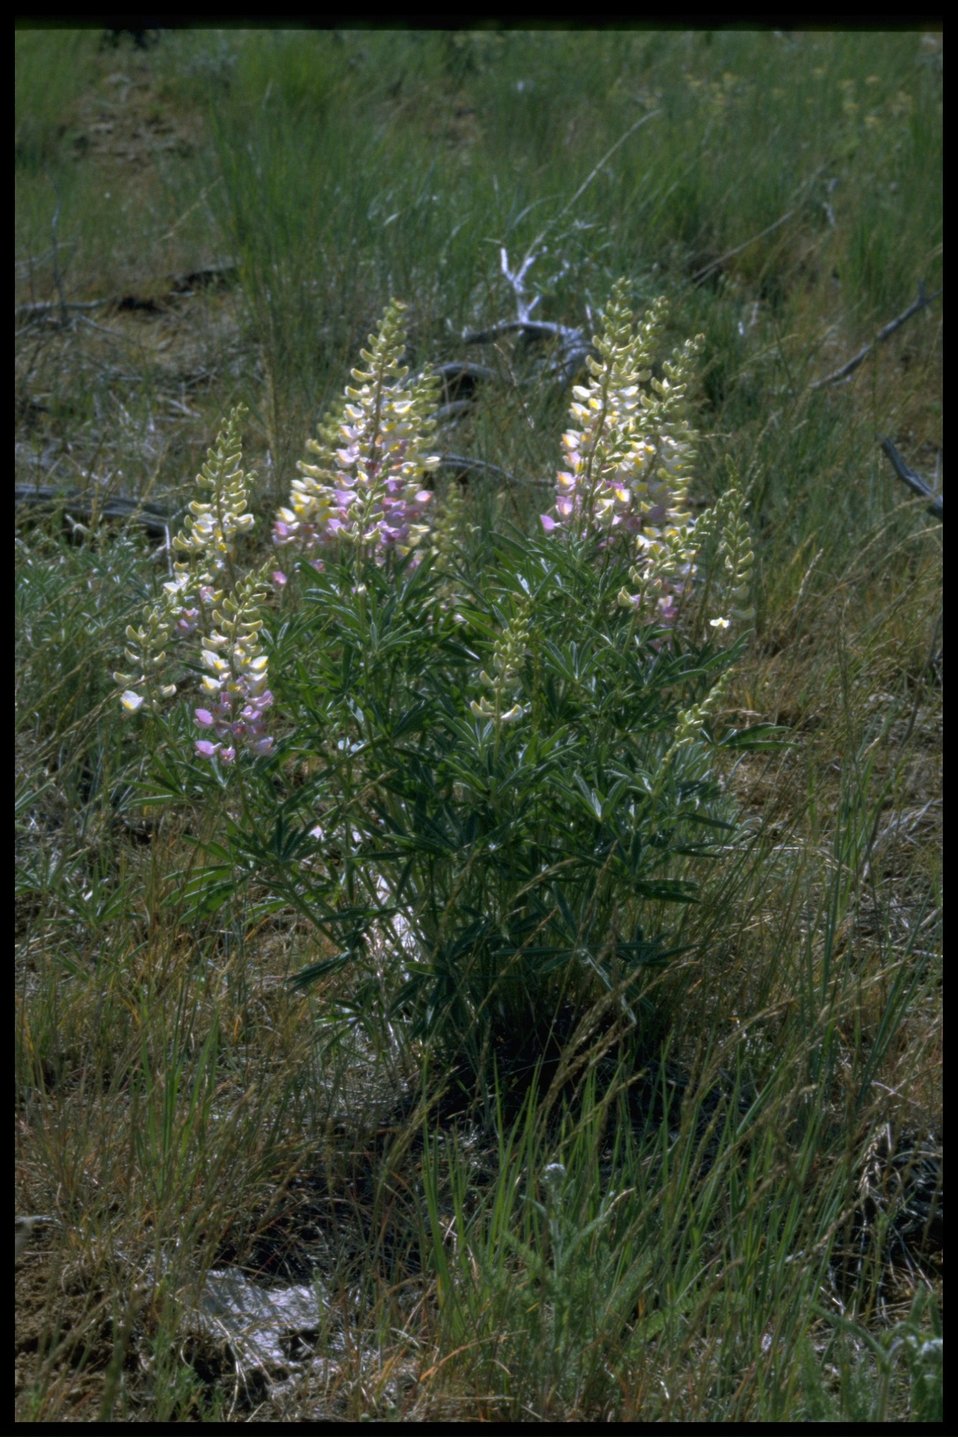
Farshot of Bigleaf Lupine, tricolor variant.